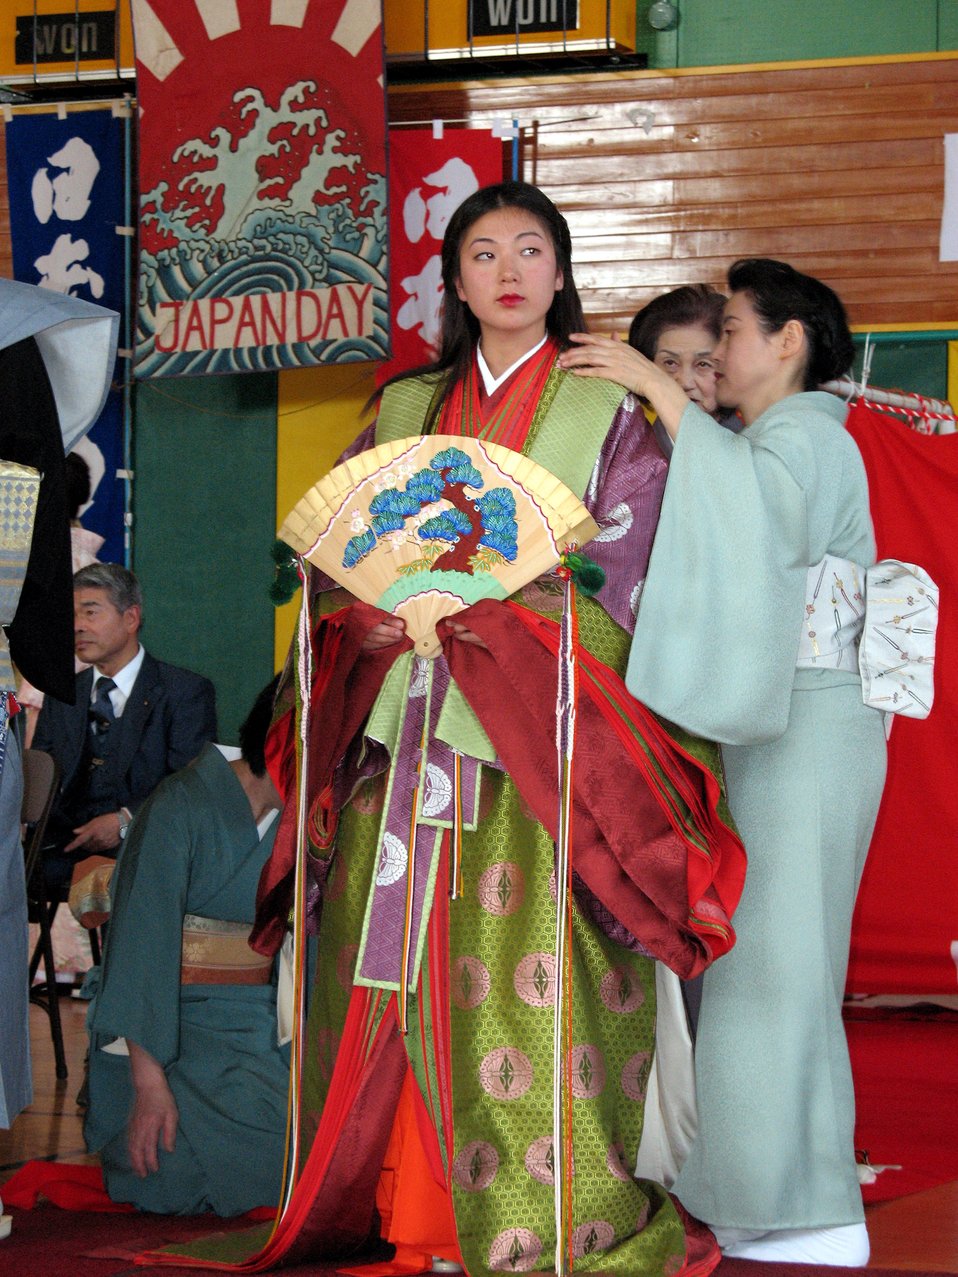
Airman celebrates base's Japan Day

Airman 1st Class Song Lee takes center stage at Misawa Air Base's 20th Annual Japan Day wearing all 12 layers of an imperial kimono. Airman Lee is assigned to the 610th Air Control Flight at Misawa.